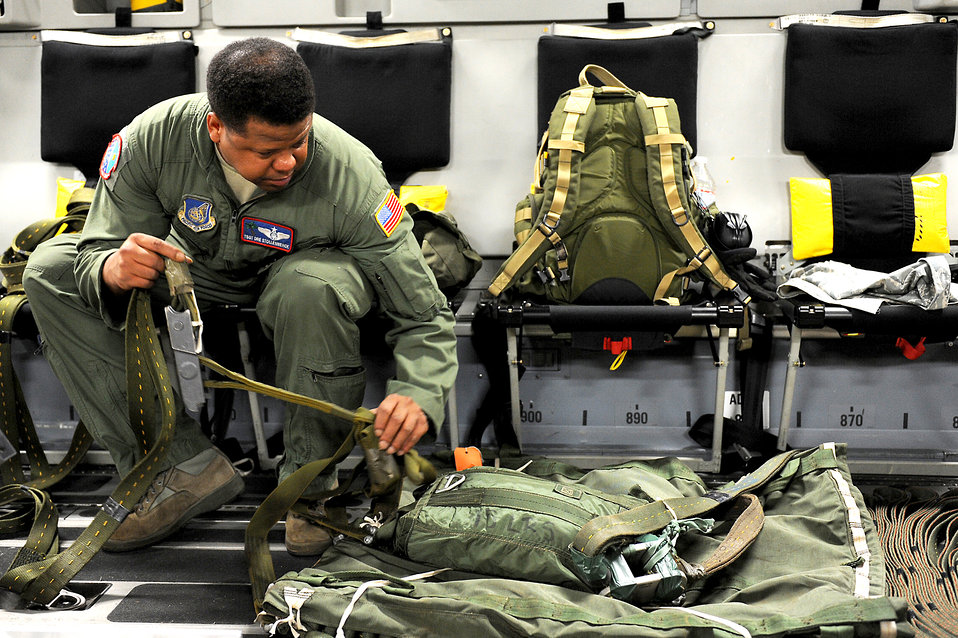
Airdrop Ops

Tech. Sgt. Dre Stollenwerck prepares a parachute for an airdrop mission Jan. 11, 2011, over Andersen Air Base, Guam. Aircrews from the 535th Airlift Squadron dropped nine training pallets during a single day of airdrop training. The aircrew then helped the 36th Contingency Response Group with static line jump training. Sergeant Stollenwerck is with the 535th AS.